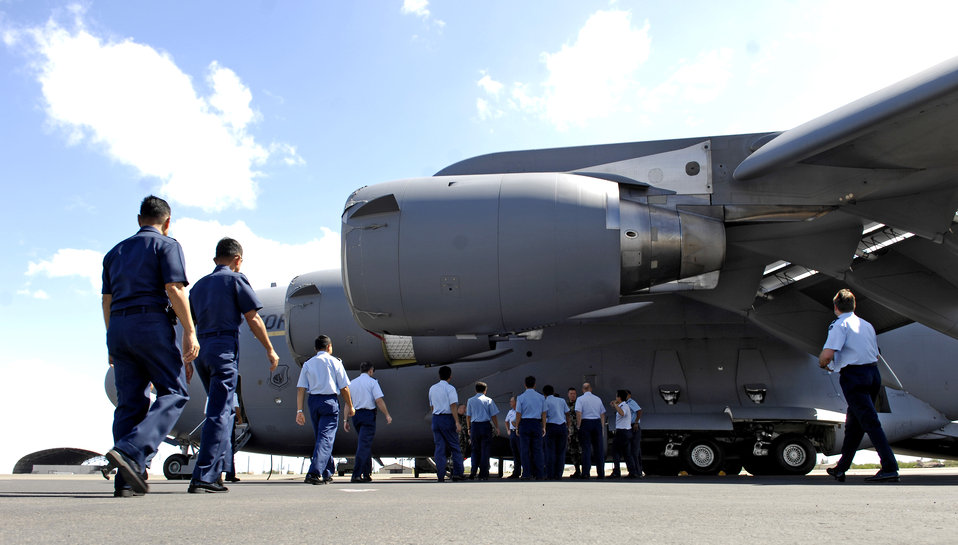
Pacific conference builds enlisted forces

Members of the Pacific Rim Airpower Symposium take a tour of a C-17 Globemaster III, Sept. 20, at Hickam Air Force Base, Hawaii. The 13th Air Force hosted the 17-nation conference focusing on aviation safety and mishap prevention.